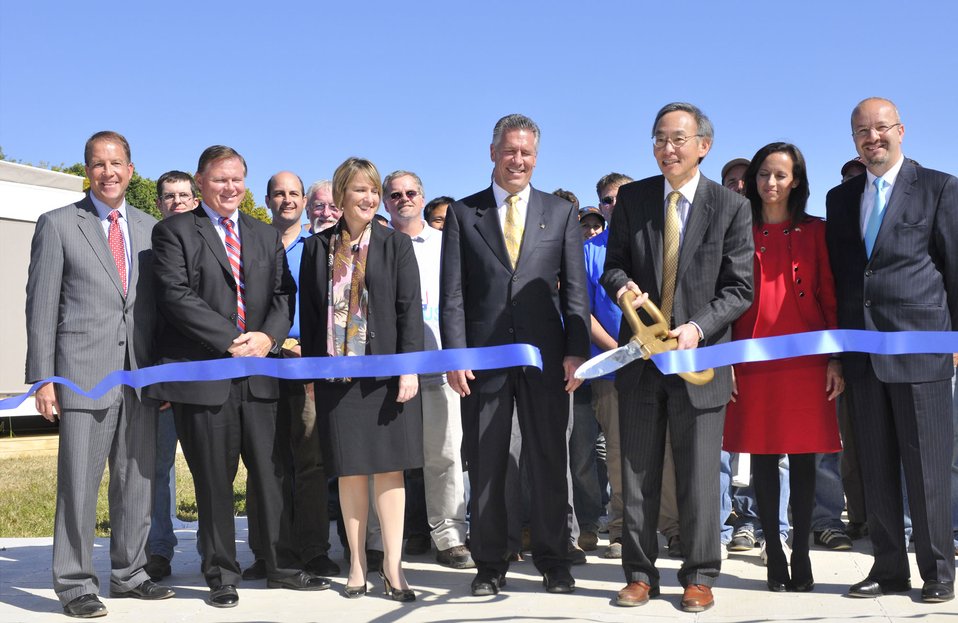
Solar Decathlon 2009 on the National Mall, with Sec. Chu

Solar Decathlon 09